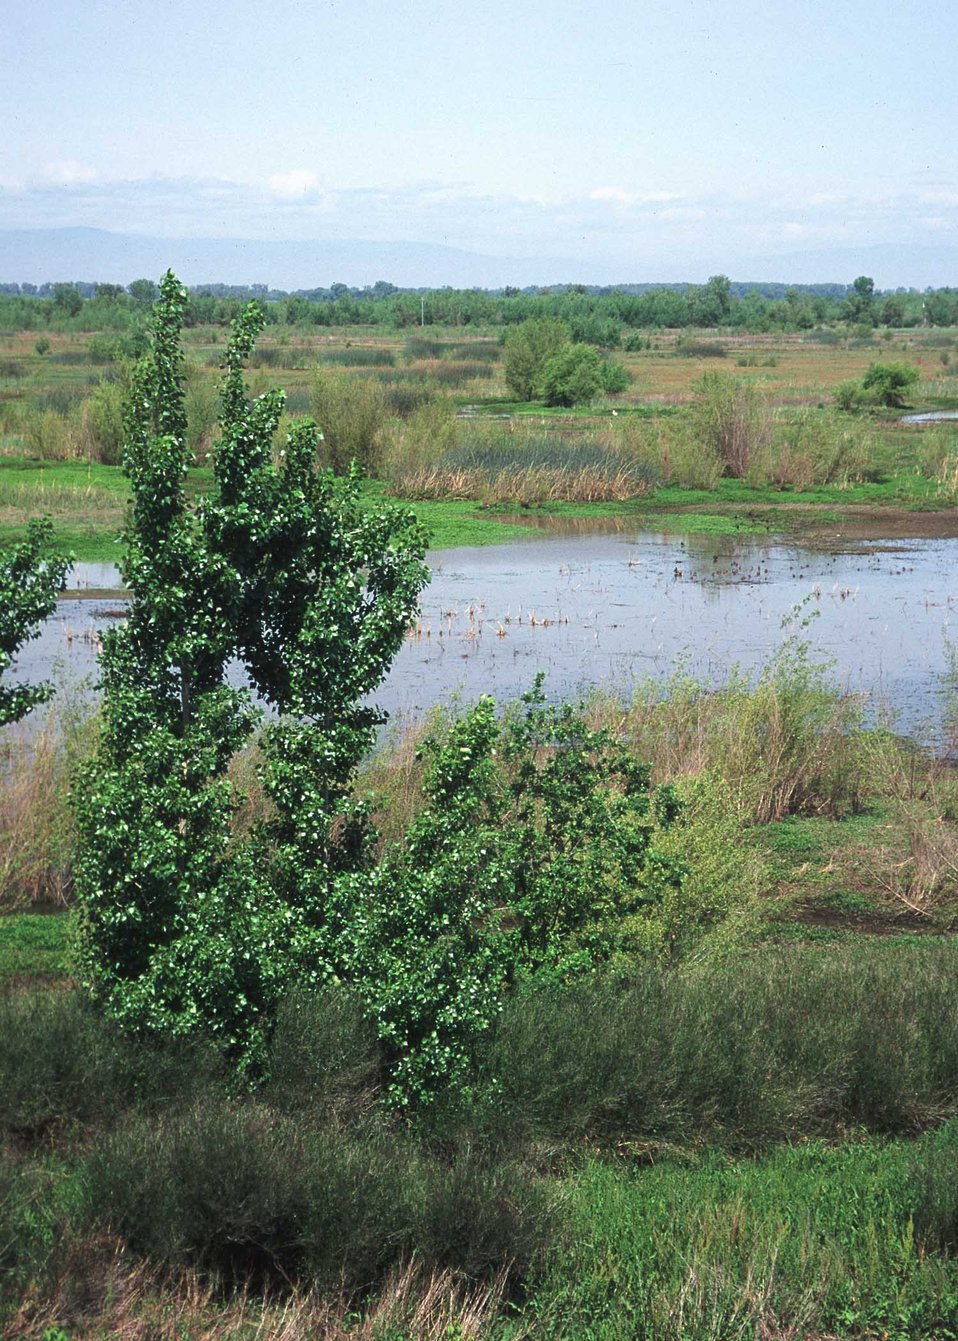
Wetlands in Butte County, CA.